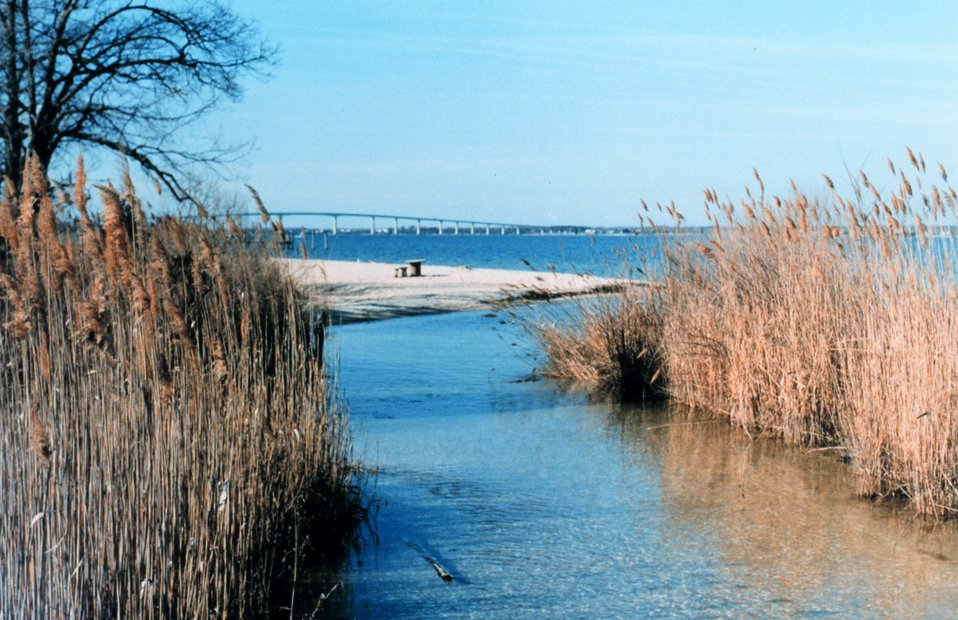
Phragmites australis lining small tidal creek